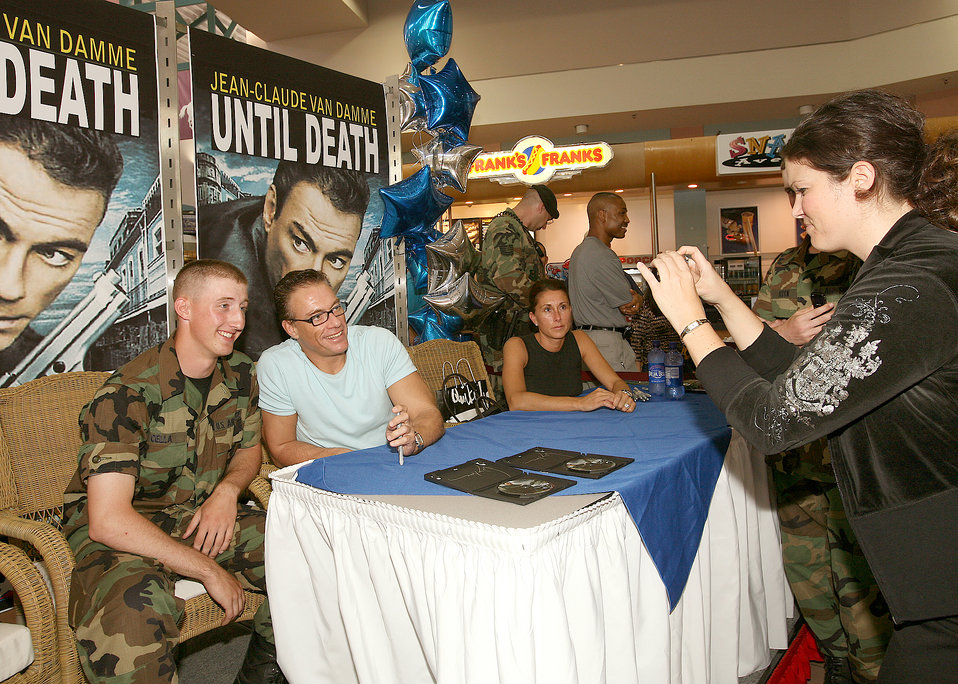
Strike a pose with Jean-Claude

Airman Basic Mathew Cella strikes a pose with actor Jean-Claude Van Damme while having his picture taken June 2 at the base exchange at Lackland Air Force Base, Texas. Mr. Van Damme signed autographs and posed for photos with base members. Airman Cella is a security forces technical training student with the 343rd Training Squadron at Lackland AFB.